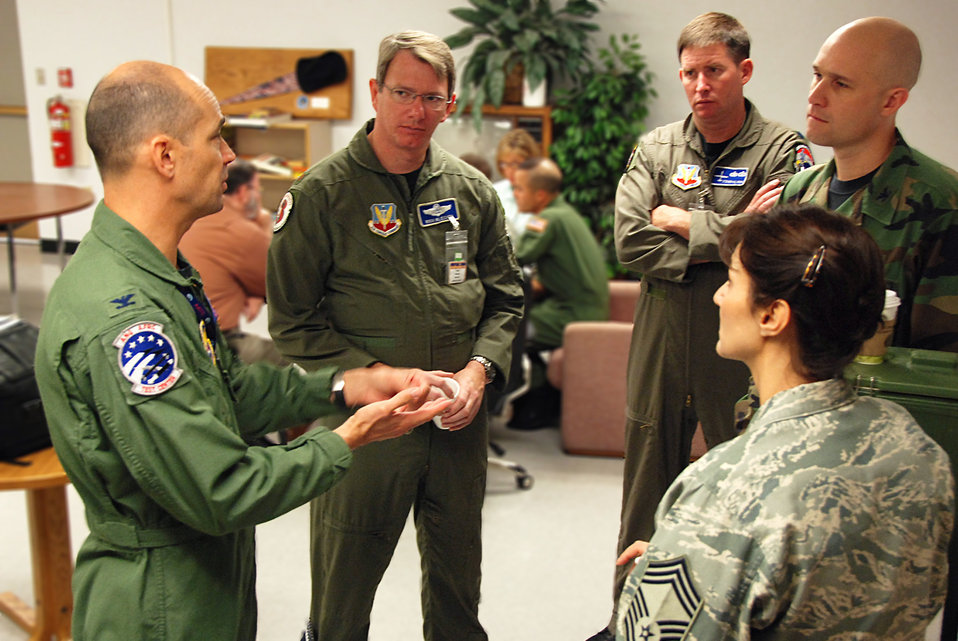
Guard, Reserve warfighters chart tactics course

Col. Dan Bader (left) speaks with Guard and Reserve Airmen at the annual Weapons and Tactic Conference Oct. 21 at Tucson, Ariz. Colonel Bader is the commander of the Air National Guard Air Force Reserve Command Test Center.